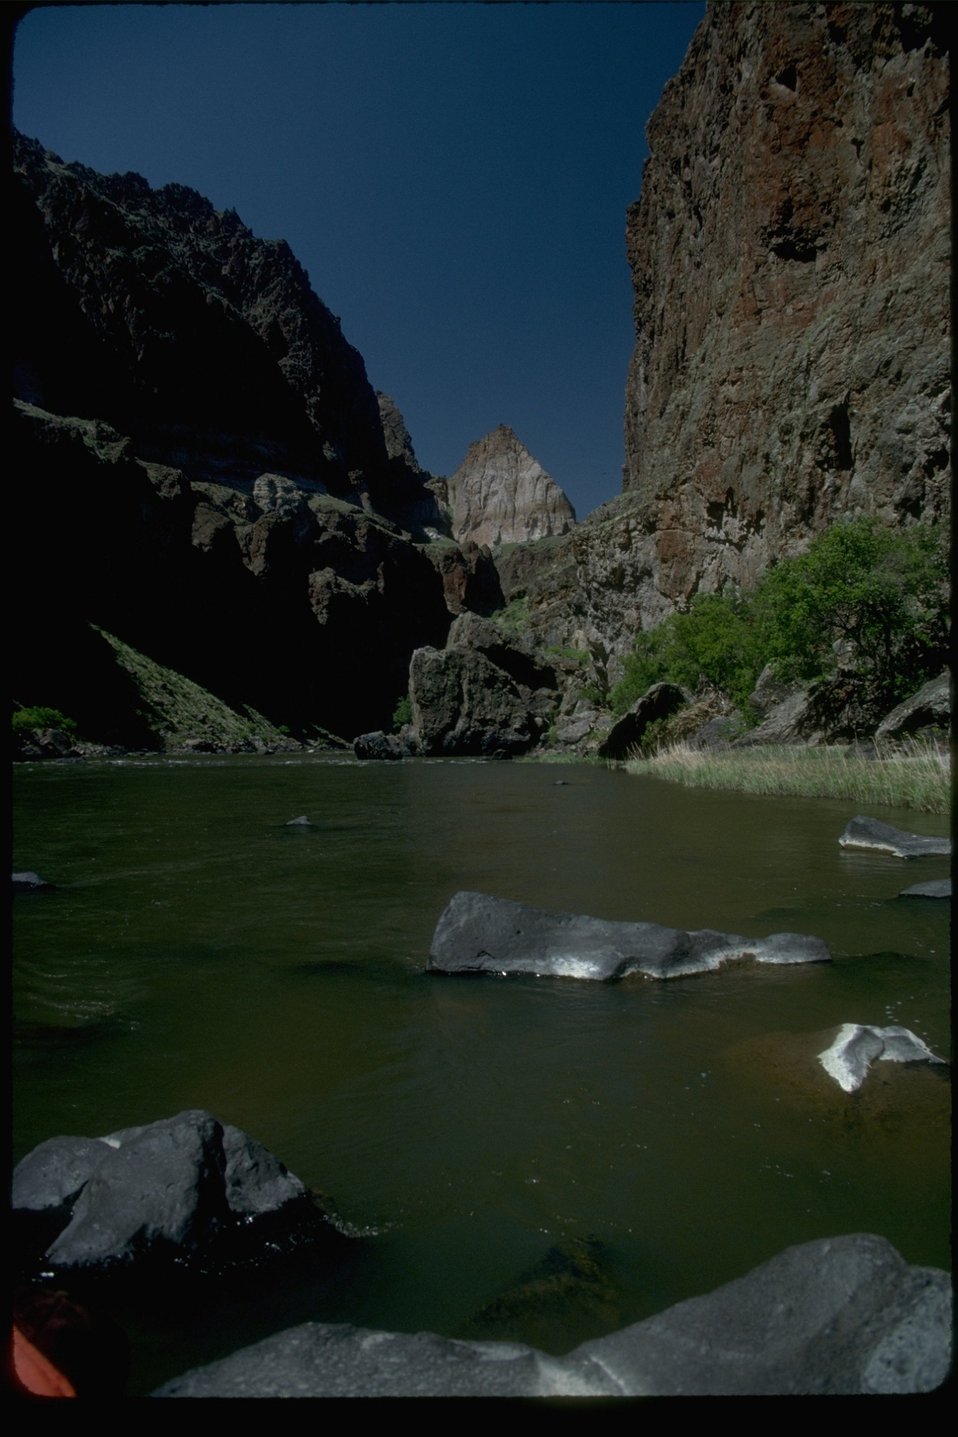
View of Lower Owyhee Canyon at River level. OR 3-110